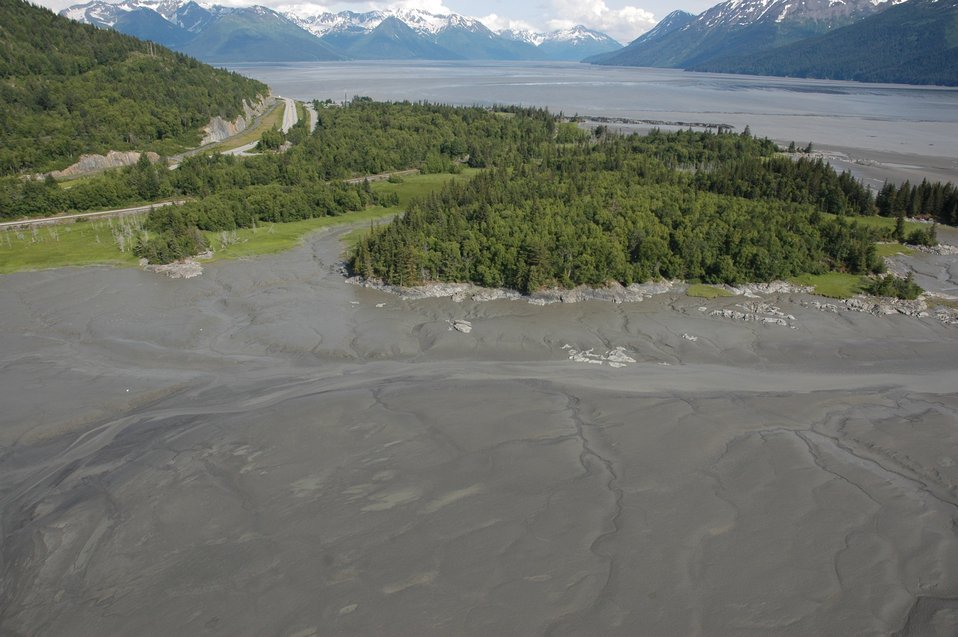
Aerial photograph. The mudflats of Turnagain Arm at low tide. This arm of Cook Inlet dashed Captain Cook's quest for a Northwest passage. It also is the location of one of the few tidal bores on the North American continent.